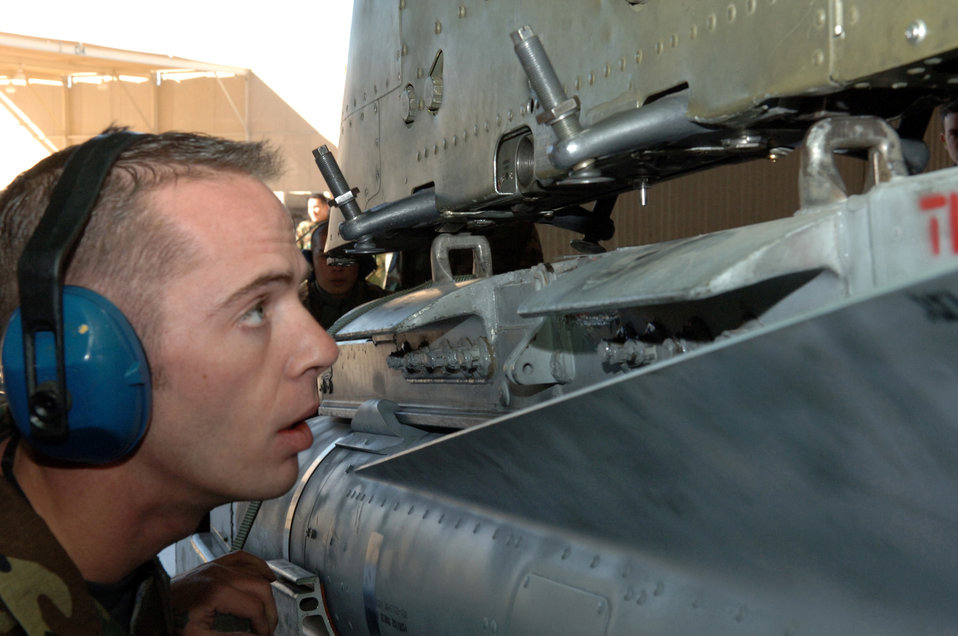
Load Crew

DAVIS-MONTHAN AIR FORCE BASE, Ariz. (AFPN) -- Staff Sgt. Paul Retherford performs an eyeball test to ensure that the suspension lugs are aligned on the bomb rack enabling the bomb to be locked on to the A-10 Thunderbolt II. Sergeant Retherford is a crew chief with the 355th Aircraft Maintenance Squadron, which is comprised of the 354th, 357th and 358th Aircraft Maintenance Units. The 357th AMU placed first and completed the load in 38 minutes and 44 seconds.